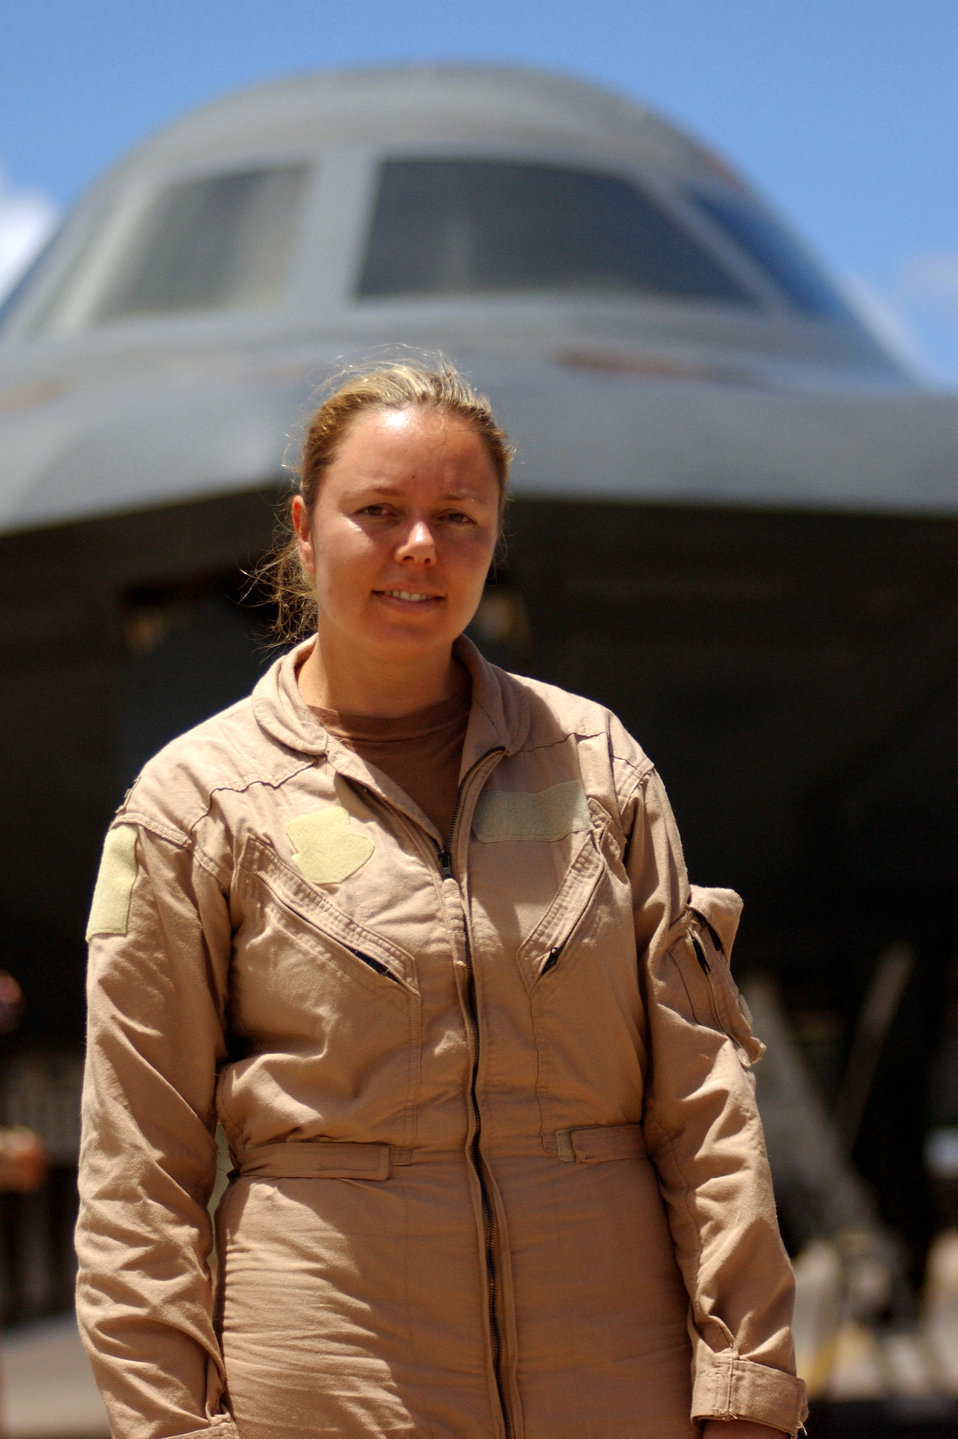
Wilson

OPERATION IRAQI FREEDOM -- Capt. Jennifer Wilson, a B-2 Spirit pilot, is the first female B-2 pilot to fly a combat mission.